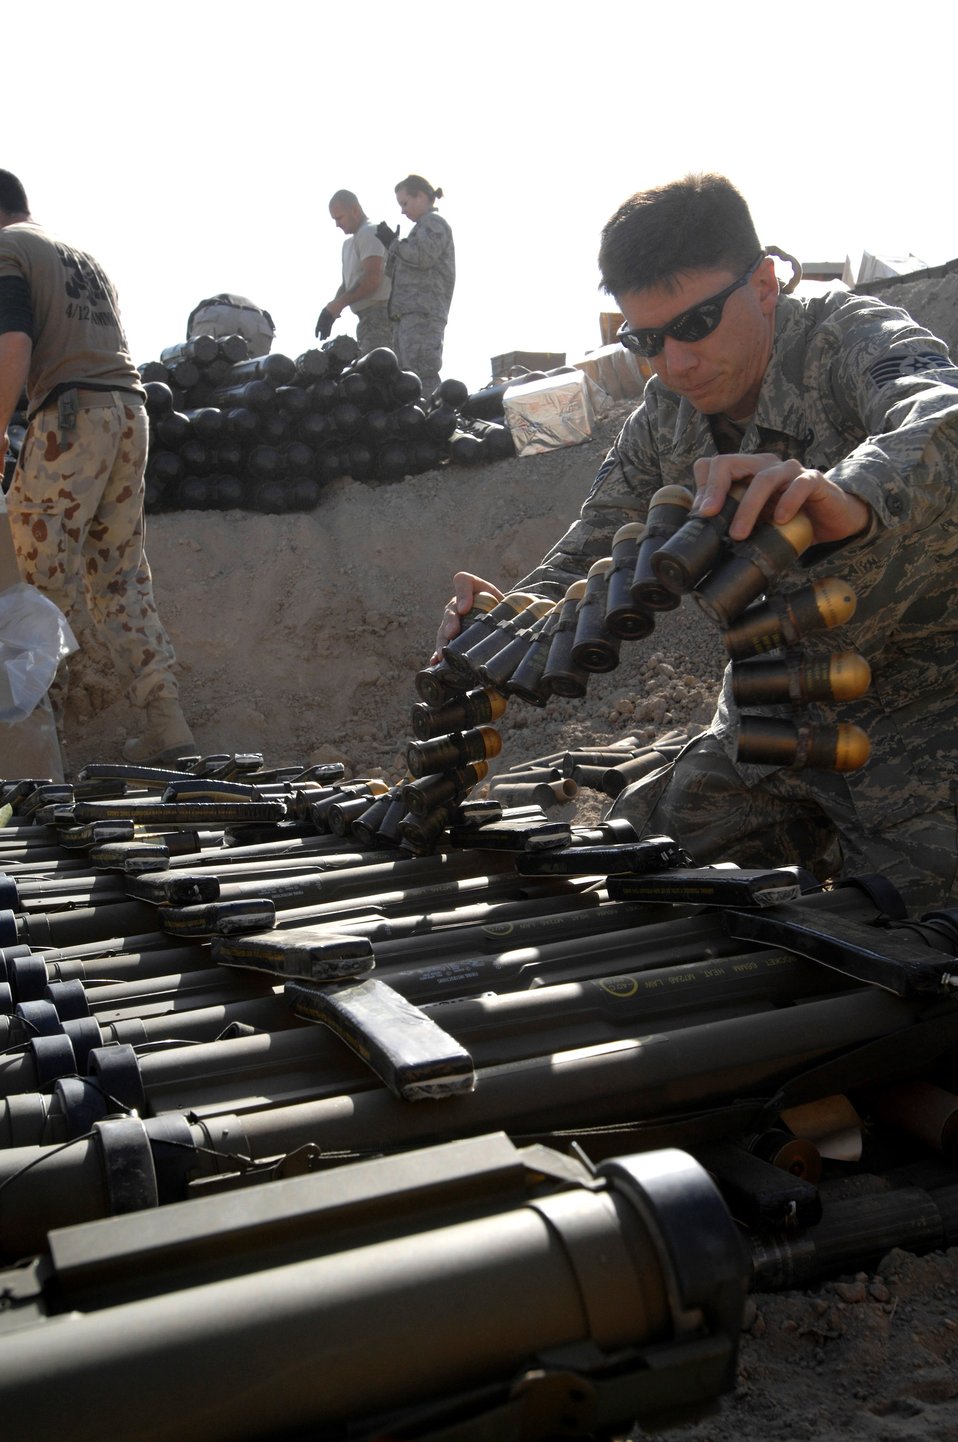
Fire in the hole

Tech. Sgt. Albert Jewell places expired munitions in a pit at Ali Base, Iraq. Explosive ordnance disposal Airmen will use explosives to destroy the munitions, ensuring the old munitions can never be used by the enemy. It also frees up storage space for newer, usable munitions.